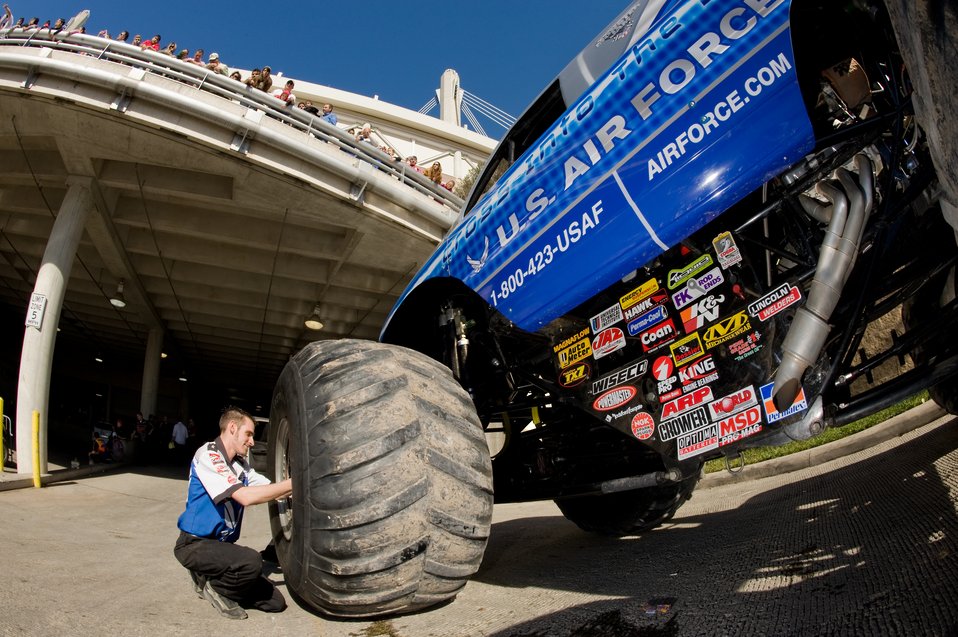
AF flies high at Monster Jam

Jesse Barden checks the tire pressure on the Air Force Afterburner monster truck Jan. 11 before the start of the 2009 Monster Jam competition at the Alamodome in San Antonio. The 66